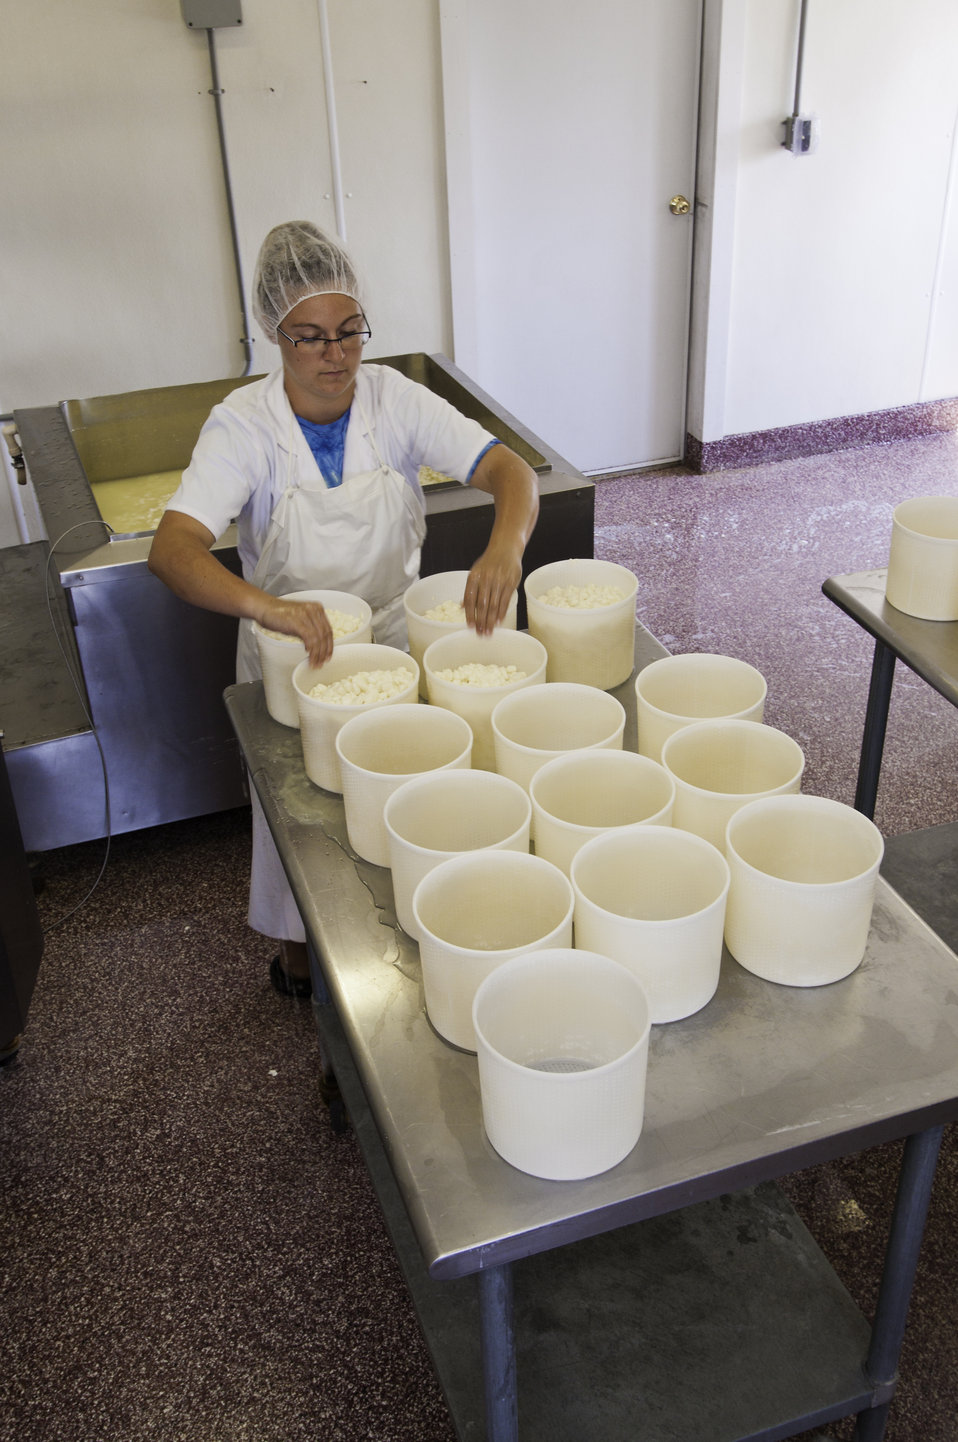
Chapel’s Country Creamery farm manager Courtney Biggs in Easton, MD pours milk curd of fresh raw milk after the milk curd has expelled the whey in the cutting process into cheese hoops called the hooping process. The curds drain in the cheese hoops for 24 hours being turned during the process until the whey has drained. Then the cheese is taken to the aging room to cure. The dairy uses fresh raw milk 12-24 hours old. The milk is all-natural and contains no synthetic hormones, antibiotics, or chemical compounds. The 1150 pounds of milk in the vat will be used to make the dairy’s “Bay Blue” Cheese.